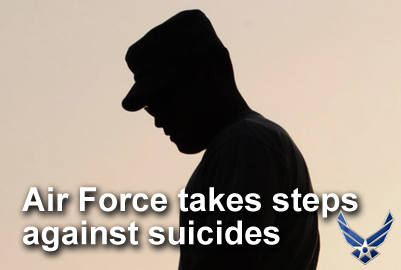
Air Force takes steps against suicide